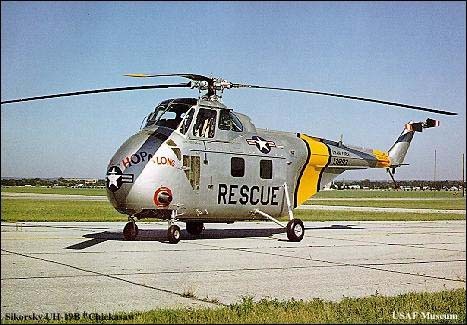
UH-19B Chickasaw

1950's -- An UH-19B Chickasaw at the Air Force Museum. Courtesy photo.